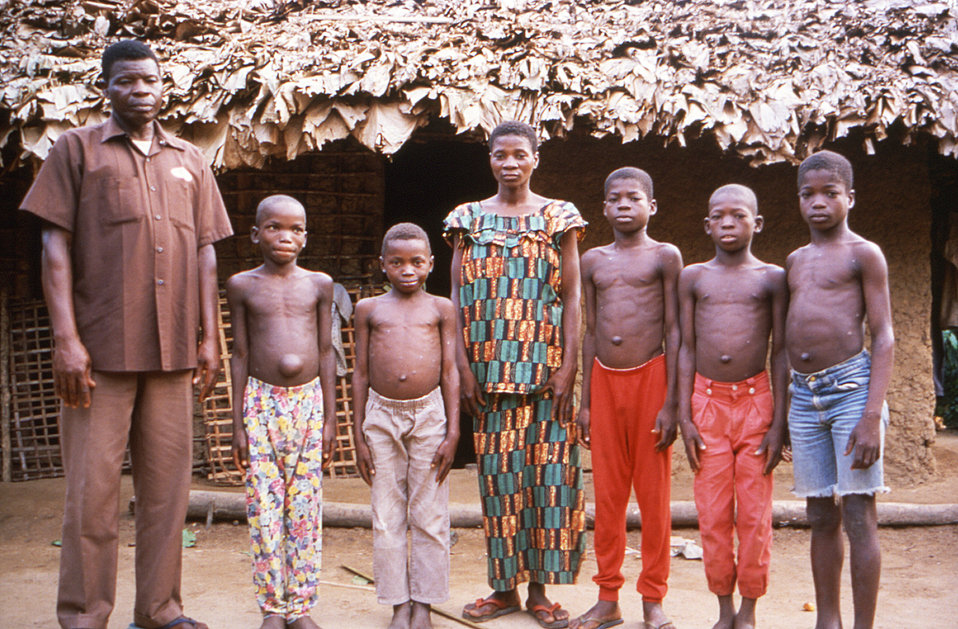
This image was created during an investigation into an outbreak of monkeypox, which took place in the Democratic Republic of the Congo (DRC), 1996 to 1997, formerly Zaire. In the midst of this study, i.e., February, 1997, when tested, the members of this family were found to have six active cases of monkeypox.